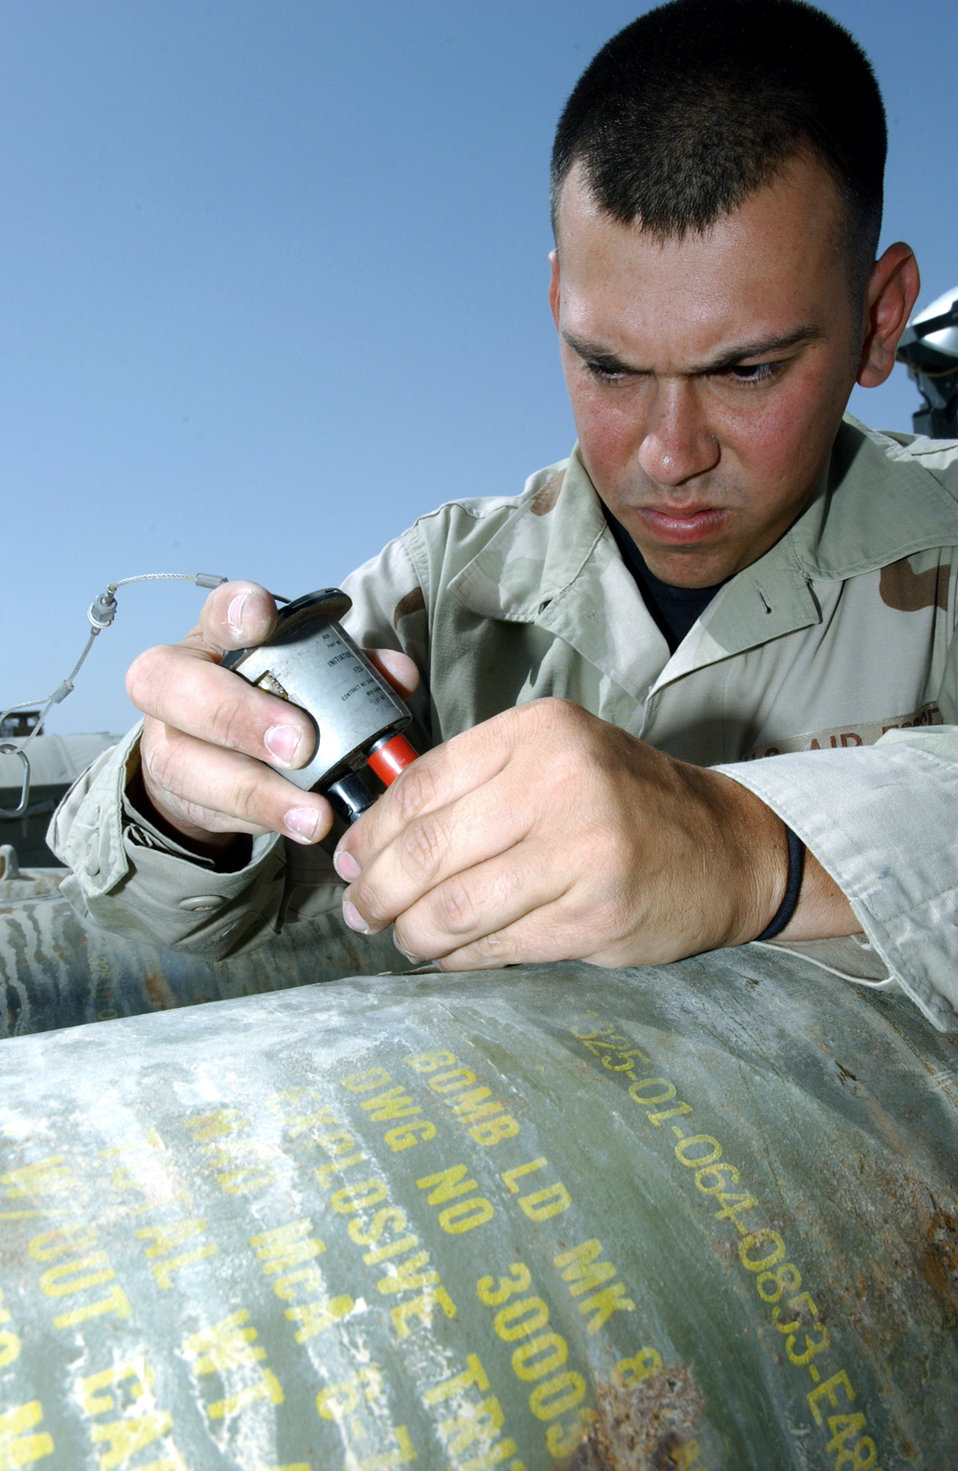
Giving Warthog its lethal bite

BAGRAM AIR BASE, Afghanistan -- Senior Airman Luis DeLeon installs the trigger mechanism in a 500-pound laser-guided bomb. The part he is installing connects to an A-10 Thunderbolt II and triggers the fuse in the bomb's tail assembly. He is assigned to the 455th Expeditionary Aircraft Maintenance Squadron and is deployed from Eielson Air Force Base, Alaska.